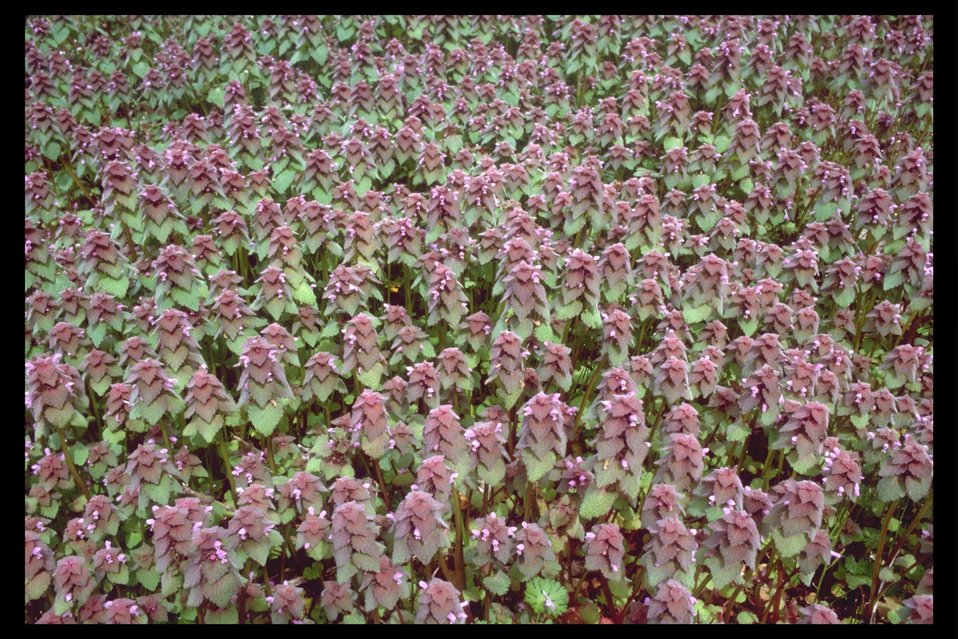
Red Henbit or Red Dead Nettle (Laminum purpureum) found along Antioch Road near Evans Creek.